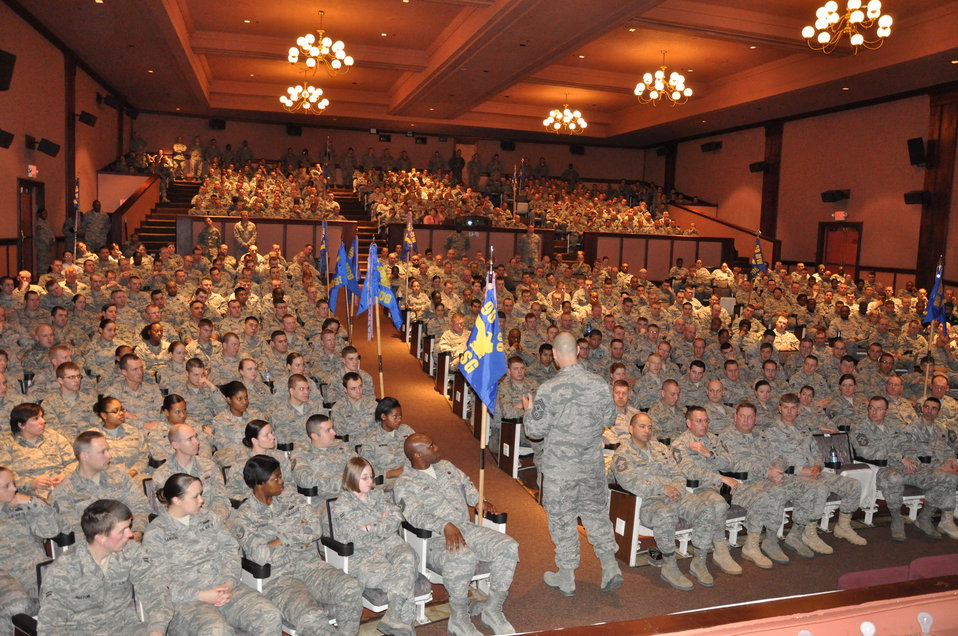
Chief Roy visits F.E. Warren Air Force Base

Chief Master Sgt. of the Air Force James Roy speaks with Airmen March 3, 2011, at the base theater during a two-day visit to F.E. Warren Air Force Base, Wyo. While there, he was the keynote speaker at the base’s National Prayer Luncheon.